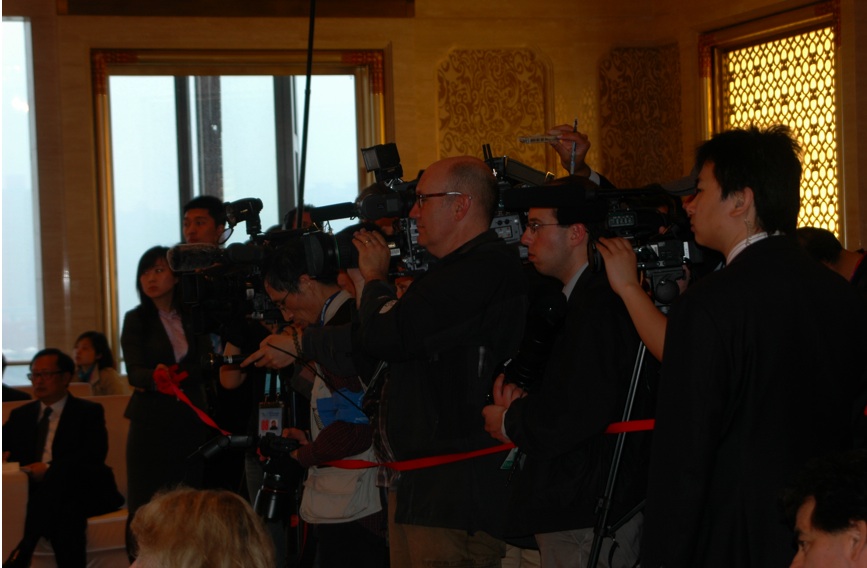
Journalists Record Footage of Secretary Clinton

Jounralists record footage of U.S. Secretary of State Hillary Rodham Clinton at the World Expo site in Shanghai, China, May 22, 2010.